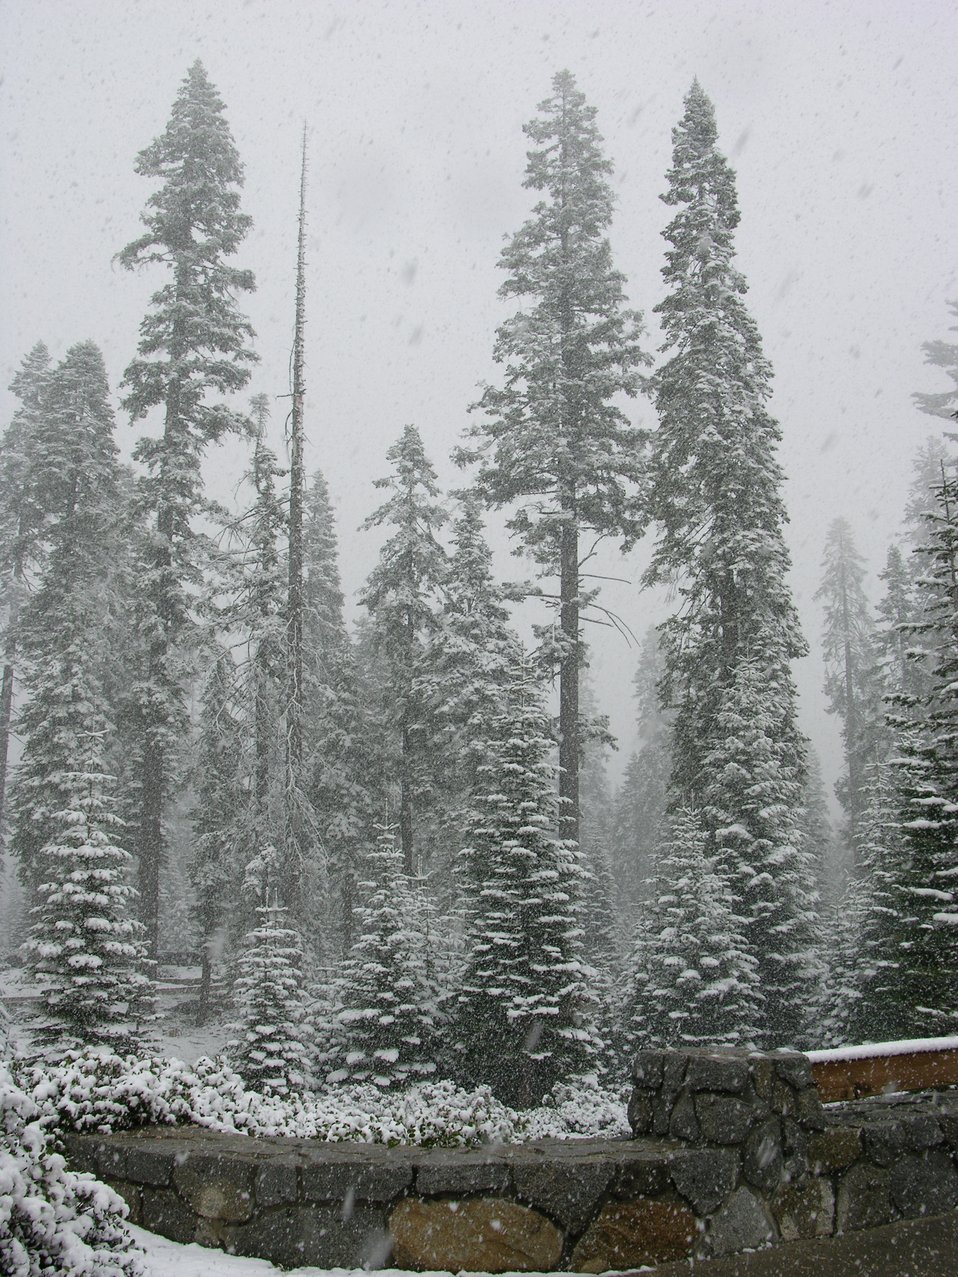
Snow in Sequoia National Park.